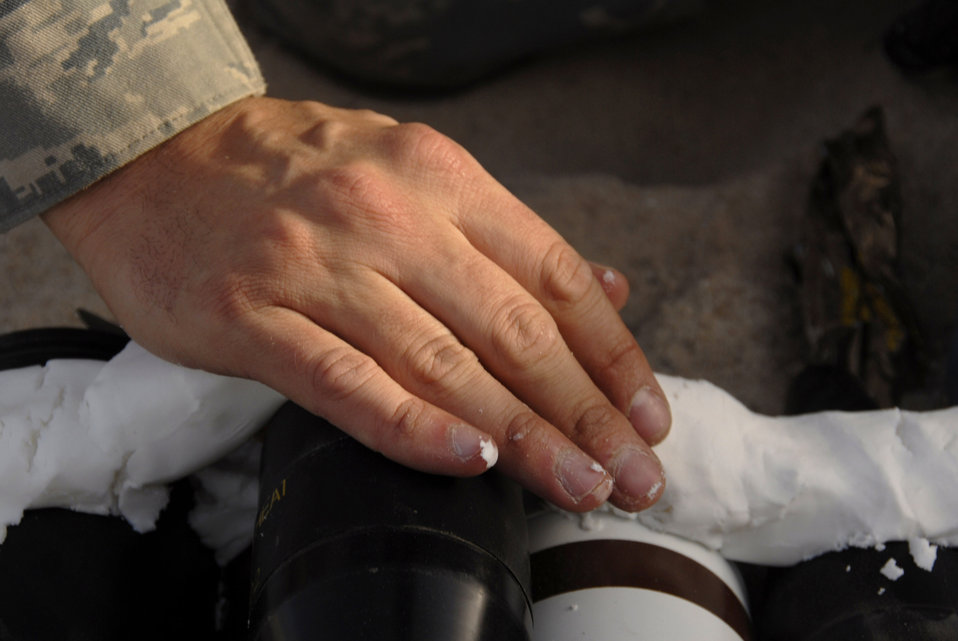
Americans, Australians go out with a bang

Senior Airman Charles Howell lays down plastic explosive over munitions in preparation for a controlled detonation with coalition forces June 20 at an explosive ordnance disposal range in Southwest Asia. The joint detonation also provided an opportunity for the U.S. and coalition forces to enhance their relations while learning some of the slight differences in operating procedures. Airman Howell is assigned to the 386th Expeditionary Civil Engineer Squadron Explosive Ordnance Disposal Flight.